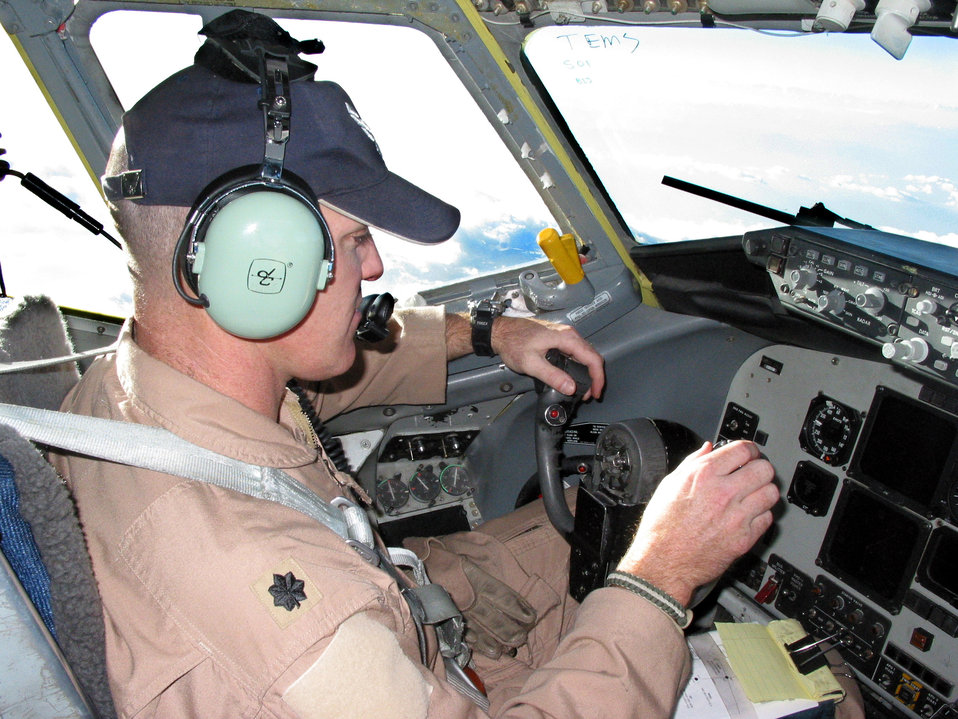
Clark

GANCI AIR BASE, Kyrgyzstan -- Lt. Col. Murph Clark flies a KC-135 Stratotanker on a combat mission over Afghanistan on Sept. 11. Clark has flown on Sept. 11 each year since 2001. He responded to the terrorist attacks in 2001 by flying over Alaska from Eielson Air Force Base. Clark is the commander of the 22nd Expeditionary Air Refueling Squadron here.